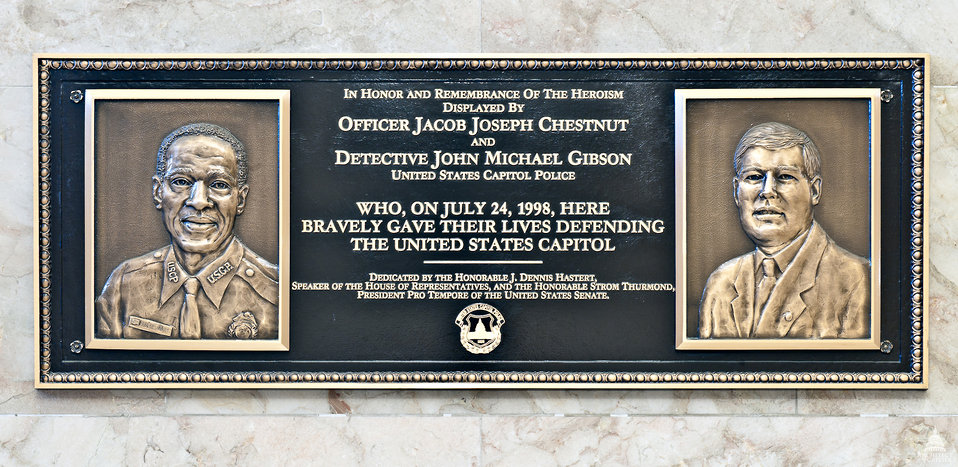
Chestnut-Gibson Plaque

Memorial to Officer Jacob Chestnut and Detective John Gibson

Memorial Door

Text of the Plaque:

IN HONOR AND REMEMBRANCE OF THE HEROISM
DISPLAYED BY
OFFICER JACOB JOSEPH CHESTNUT
AND
DETECTIVE JOHN MICHAEL GIBSON
UNITED STATES CAPITOL POLICE
WHO, ON JULY 24, 1998, HERE
BRAVELY GAVE THEIR LIVES DEFENDING
THE UNITED STATES CAPITOL

DEDICATED BY THE HONORABLE J. DENNIS HASTERT,
SPEAKER OF THE HOUSE OF REPRESENTATIVES, AND THE HONORABLE STROM THURMOND,
PRESIDENT PRO TEMPORE OF THE UNITED STATES SENATE